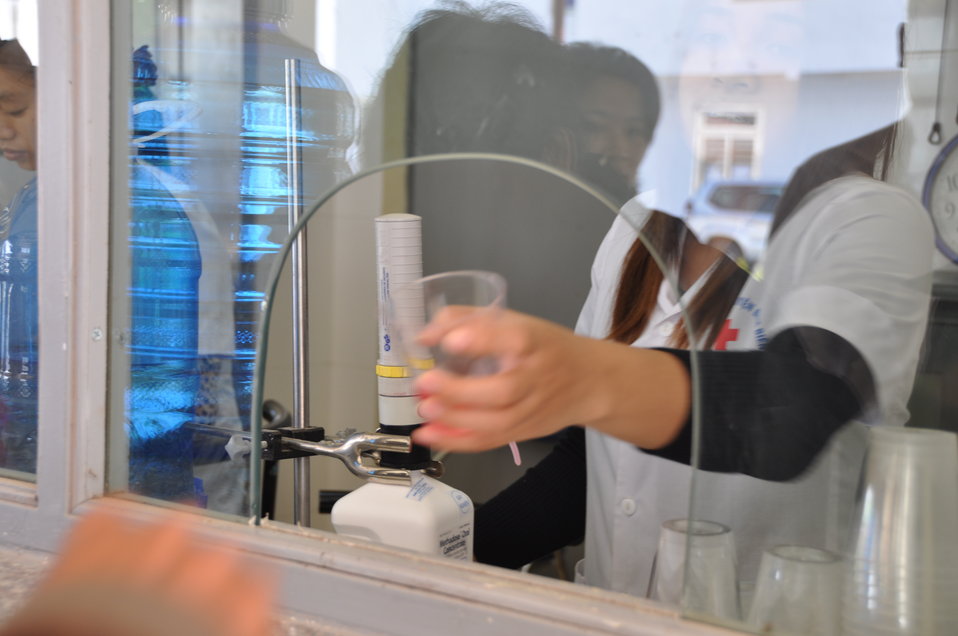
Patients receive methadone treatment in Dien Bien